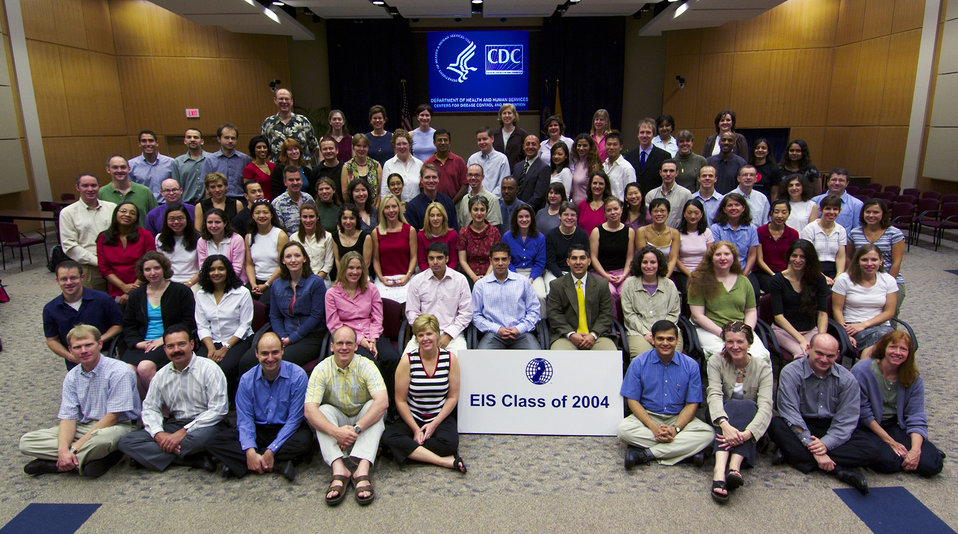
This photograph showed the Epidemic Intelligence Service (EIS) graduating class of 2004.